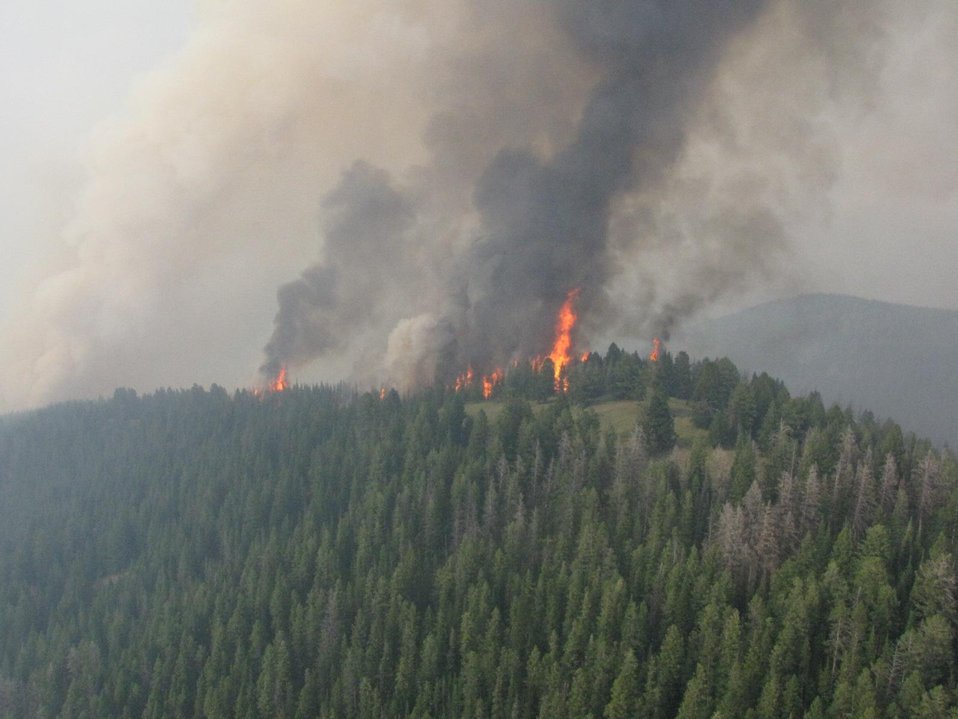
The Gold Pan Fire in the Bitterroot National Forest near Conner, MT began by lightning on Jul. 16, 2013 by lighting have consumed approximately 16,330 acres.